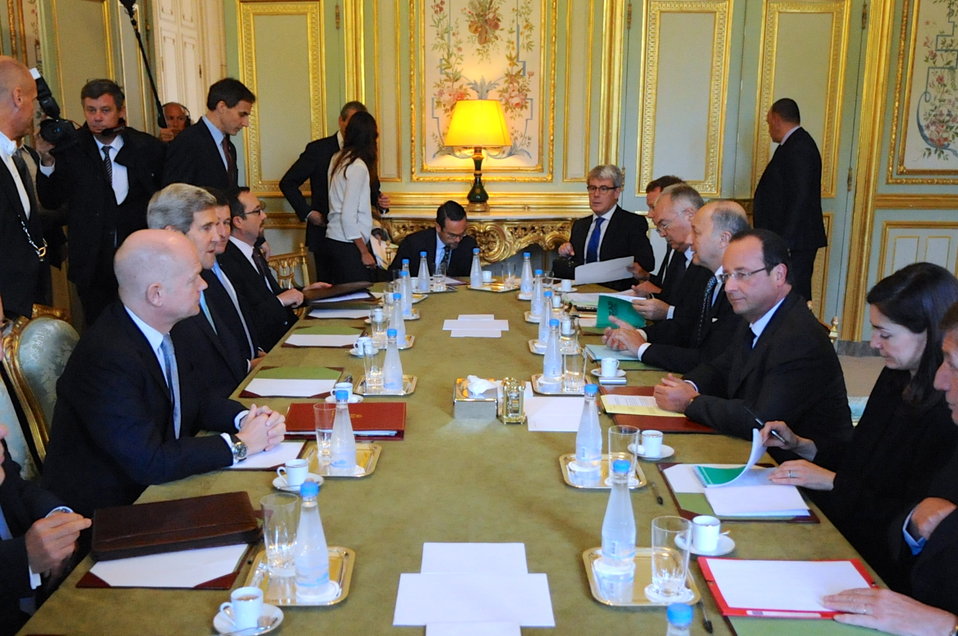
Secretary Kerry, French President Hollande Discuss Syrian Chemical Weapons Stock

U.S. Secretary of State John Kerry sits across from French President Francois Hollande before a P3 meeting with British Foreign Secretary William Hague and French Foreign Minister Laurent Fabius, focused on Syria's chemical weapons stock, at Elysee Palace in Paris on September 16, 2013.